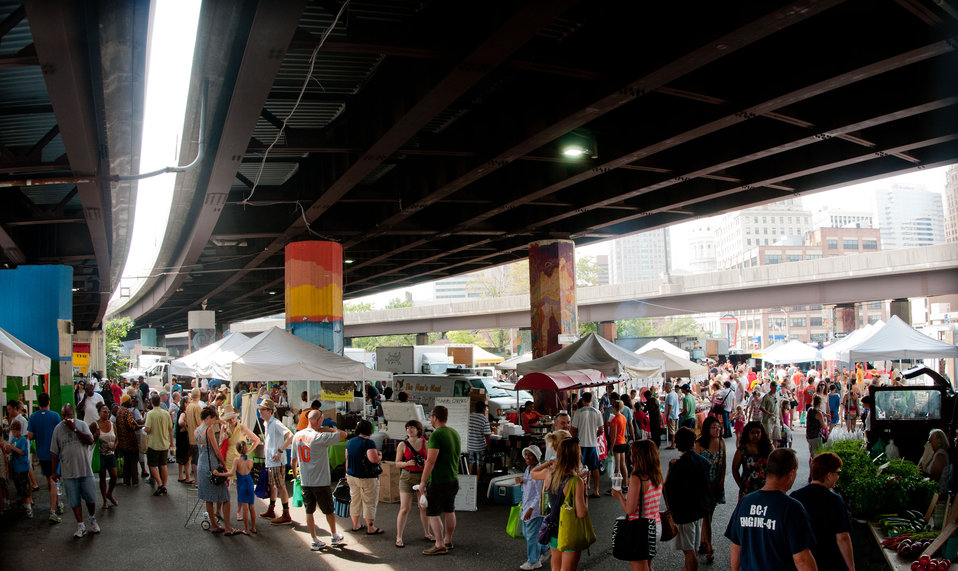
In a parking lot under a highway interchange, Baltimore’s Farmers Market and Bazaar has a busy day despite a heat index over 100 degrees in Baltimore, MD on Sunday, July 8, 2012. . Many of the vendors now accept Baltimore’s Farmers Market and Bazaar tokens thanks to the new wireless connected electronic card reader that accepts the U.S. Department of Agriculture’s (USDA) Food Nutrition Service’s (FNS) Supplemental Nutrition Assistance Program (SNAP) Electronic Benefits Transfer (EBT) cards, Baltimore Bucks, and debit cards.